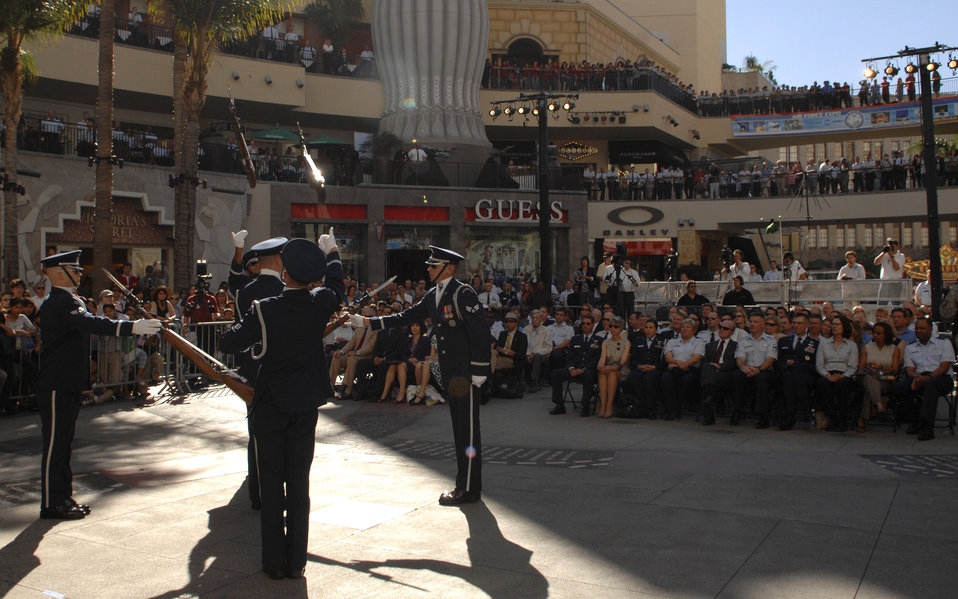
Air Force Week showcases people, missions

The Air Force Honor Guard Drill Team performs Nov. 14 at Hollywood and Highland in Los Angeles for the opening ceremonies for Air Force Week-Los Angeles. The drill team performance was one of many attractions at the event. Others included flyovers by several different Air Force aircraft, interactive expos and performances by the Air Force band. Air Force Week-Los Angeles is Nov. 14 to 21 and has events throughout the area.